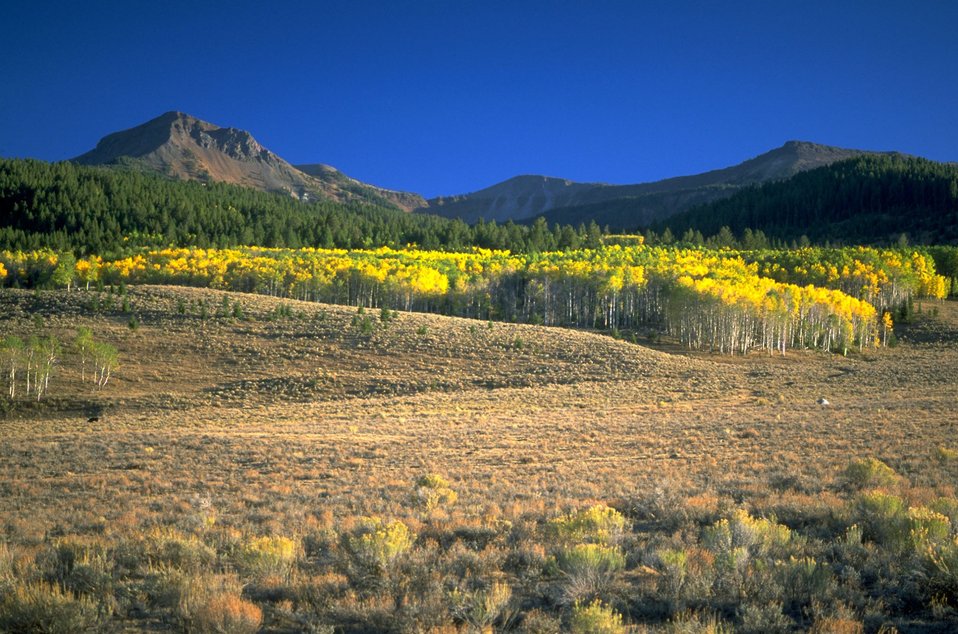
Baldy Mountain in the Centennial Range with forrested uplands and aspen grove in the foreground